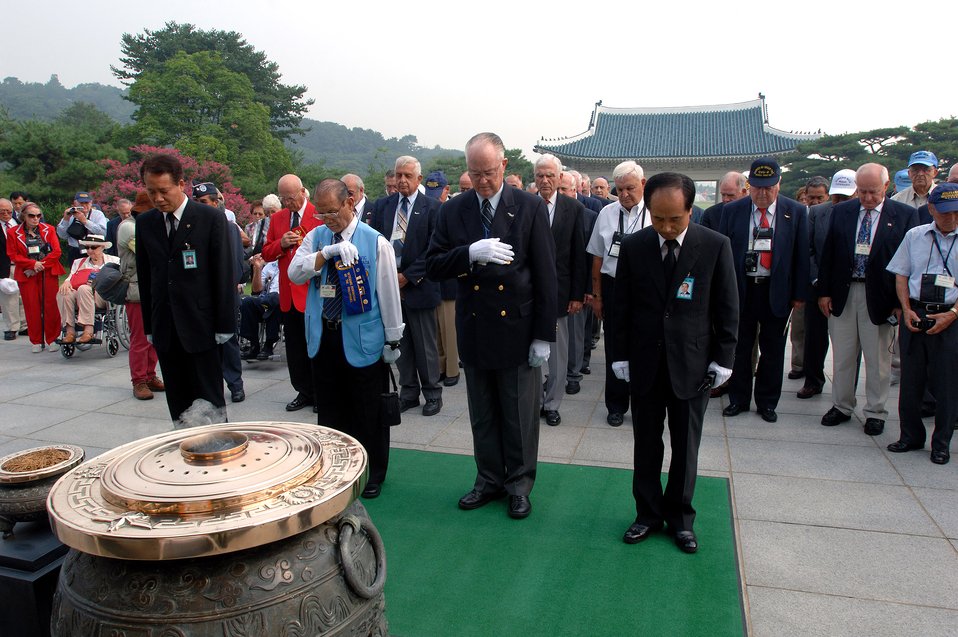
Korean War veterans give sage advice to Airmen

More than 200 Korean War veterans and family members pay respect to the men and women lost during the war with a moment of silence during a ceremony at the South Korean National Cemetery Sept. 12. The South Korean government's Revisit Korea program invites war veterans each year to come to South Korea to honor the men and woman from 21 countries who served during the Korean War. Nearly 25,000 veterans have participated in this program since 1975.